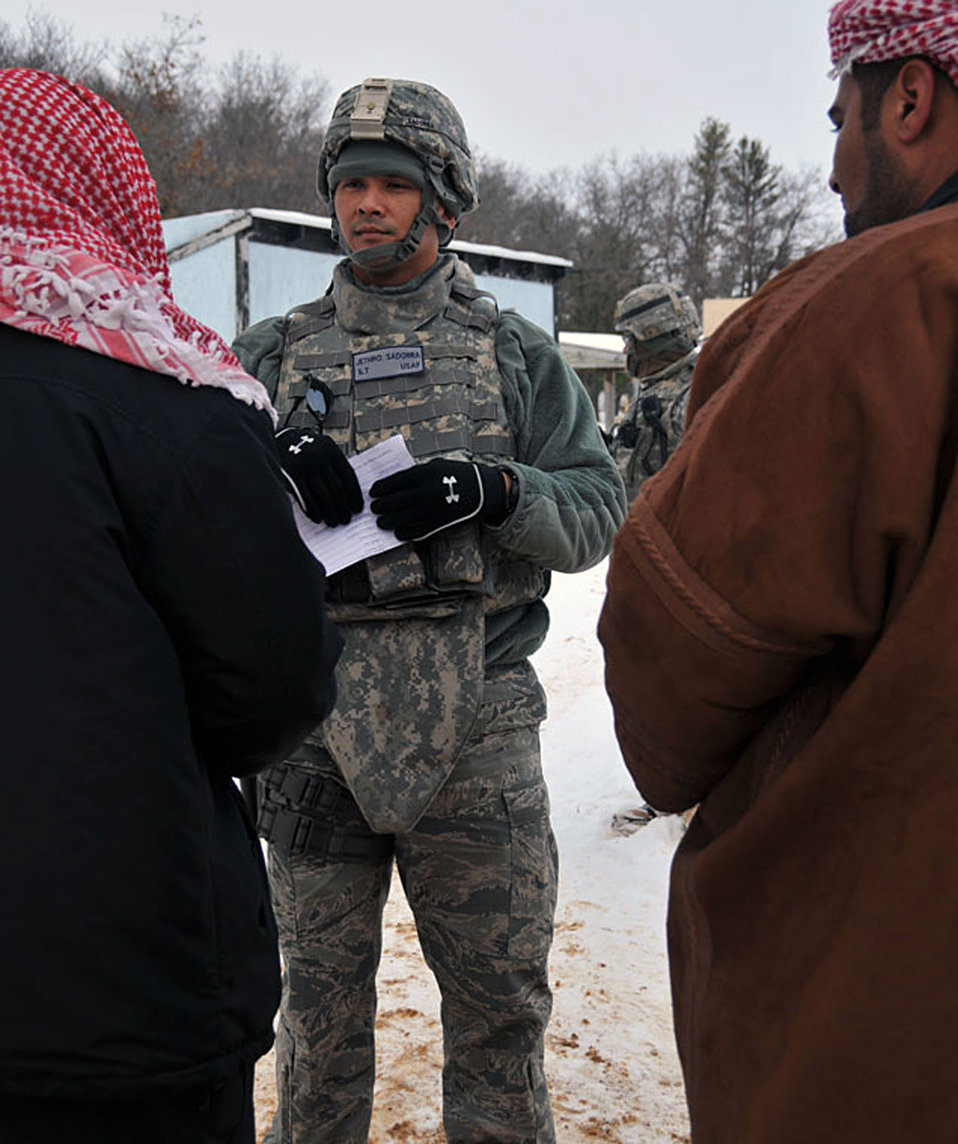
Engineer helps squadron

Engineers train at Fort McCoy, Wis., for their recent deployment to Afghanistan. The engineers are assigned to the 452nd Civil Engineer Squadron at March Air Reserve Base, Calif., and the 934th Civil Engineer Squadron at Minneapolis-St. Paul Air Reserve Station, Minn.